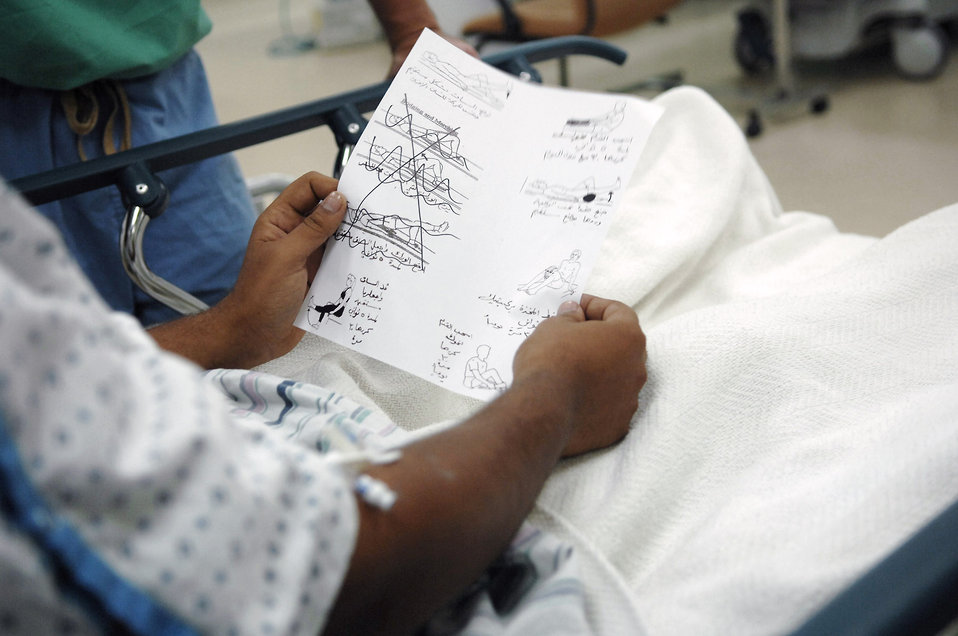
A new leg to stand on

An Iraqi policeman looks over various physical therapy exercises July 4 at Joint Base Balad, Iraq. The therapy will help his leg to heal properly following surgery. The goal of each exercise is to strengthen various muscle groups and surrounding tissues so they will be able to hold the weight of his as he regains the ability to walk.